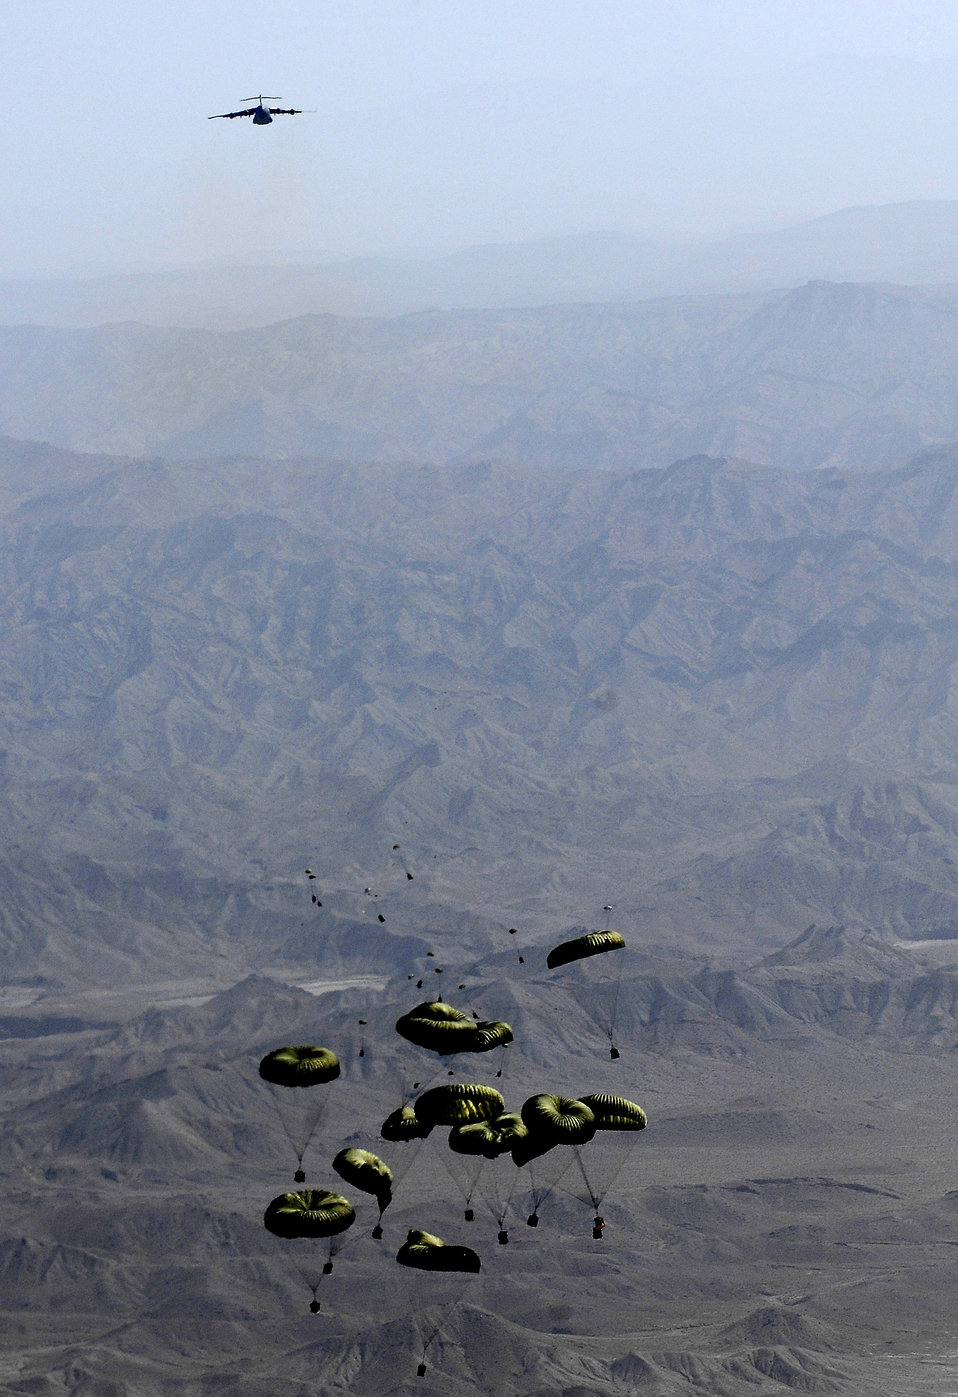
C-17 crews make record airdrop

As bundles from the lead C-17 Globemaster III drift to the ground, a second C-17 prepares to drop more bundles to a drop zone Oct. 11 in Afghanistan. A total of 62 cargo bundles were dropped from two C-17s in two passes. This was the first time a combat cargo drop of this magnitude has taken place from two C-17s in formation over one drop zone. The planes and crews are part of the 817th Expeditionary Airlift Squadron at Manas Air Base, Kyrgyzstan.